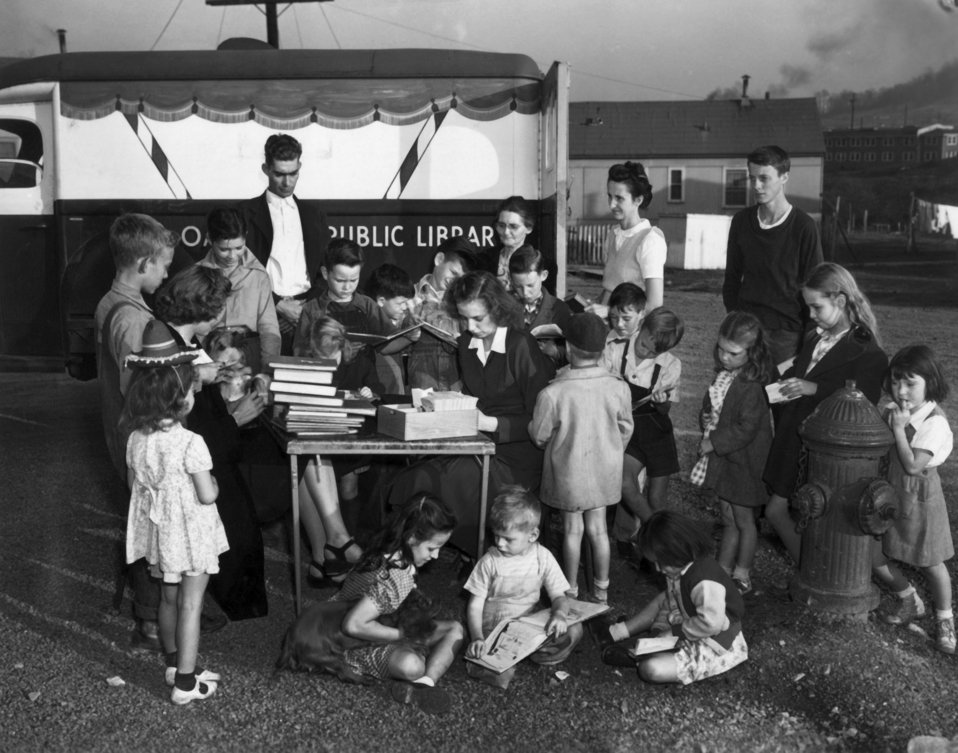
Travel Library Book Reading Oak Ridge

3136-1 DOE photo by Ed Westcott 1946 55